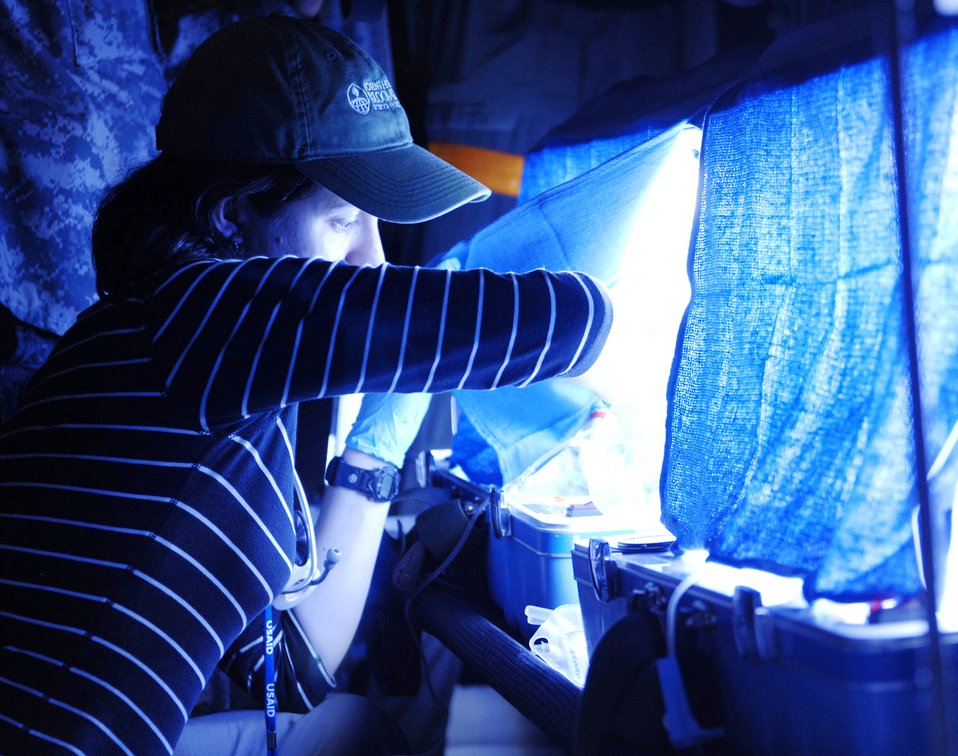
Air Force 'angels' rescue injured Haitians

Dr. Maggie Brewinski checks on two 8-day-old twins who were born 10-weeks premature during an aeromedical evacuation flight out of Haiti Jan. 22, 2010. Doctor Brewinski is a pediatrician with the U.S. Agency for International Development.